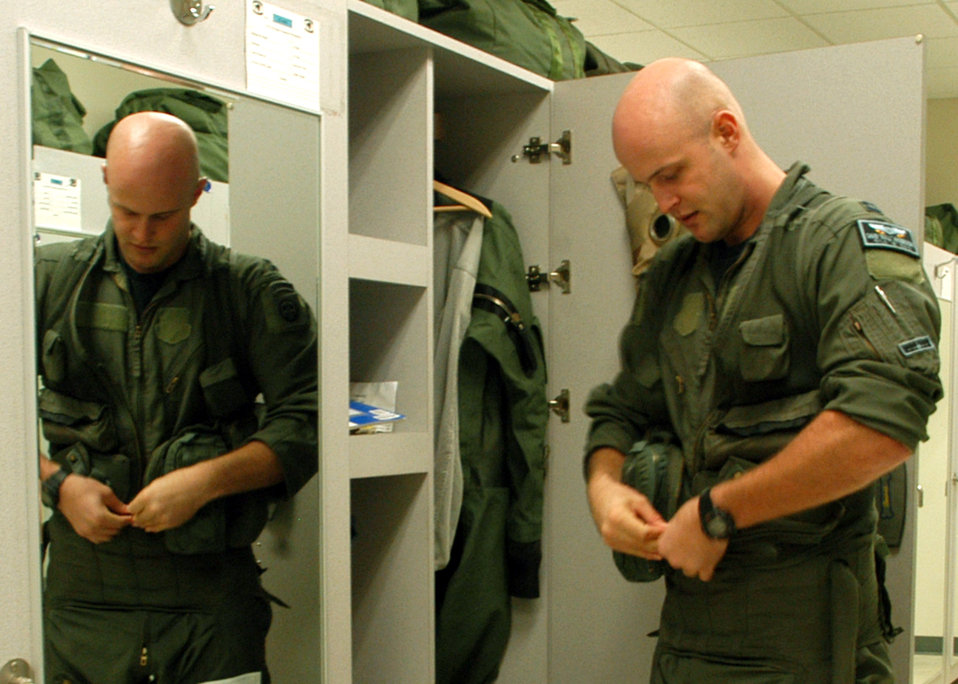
Wolf Pack member receives Distinguished Flying Cross

Capt. Dave Anderson suits up for a training mission Sept. 10 at Kunsan Air Base, South Korea. Captain Anderson received the Distinguished Flying Cross for his actions in support of Operation Iraqi Freedom. He is a 35th Fighter Squadron flight commander.